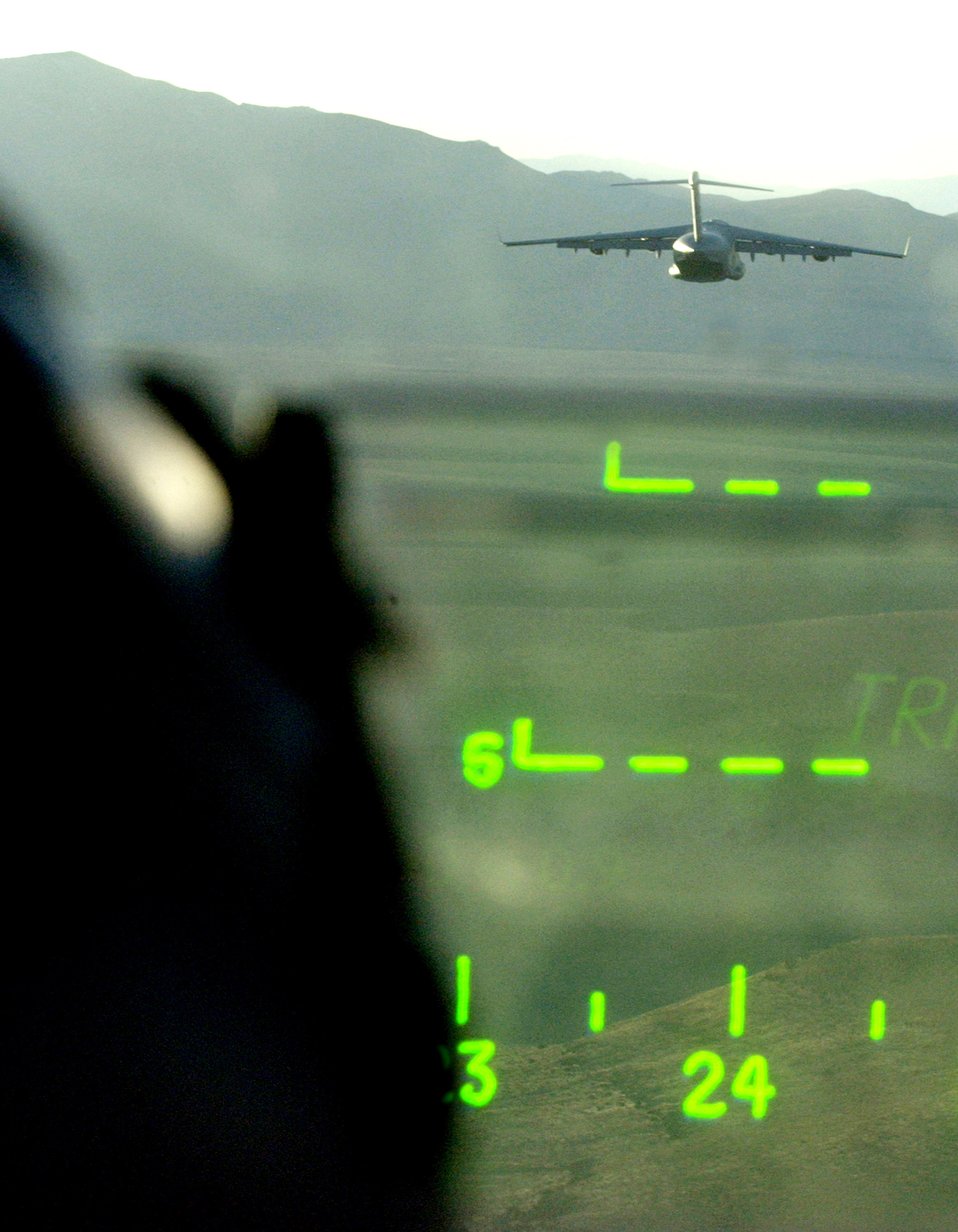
Mission Employment Exercise 06

A pilot's view as a C-17 Globemaster III heads out to the Nevada Test and Training range Dec.8 during the U.S. Air Force Weapon School's Mission Employment Phase held at Nellis Air Force Base, Nev. The ME Phase is the final stage of a five-and a- half month course, which trains students in their specialties, and it is the final event prior to Weapons School graduation.